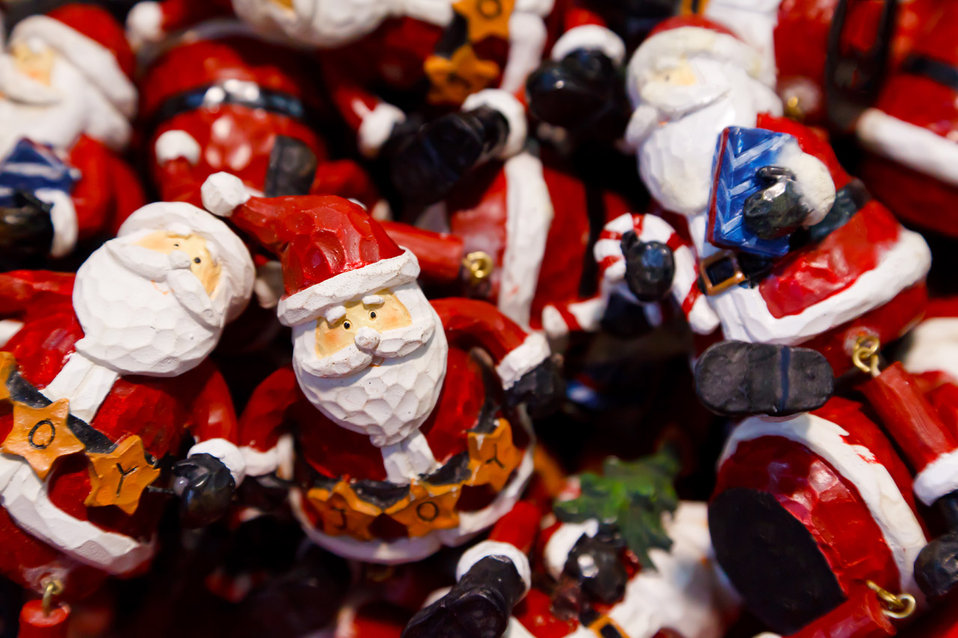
Santa claus background

Red santa claus toys.